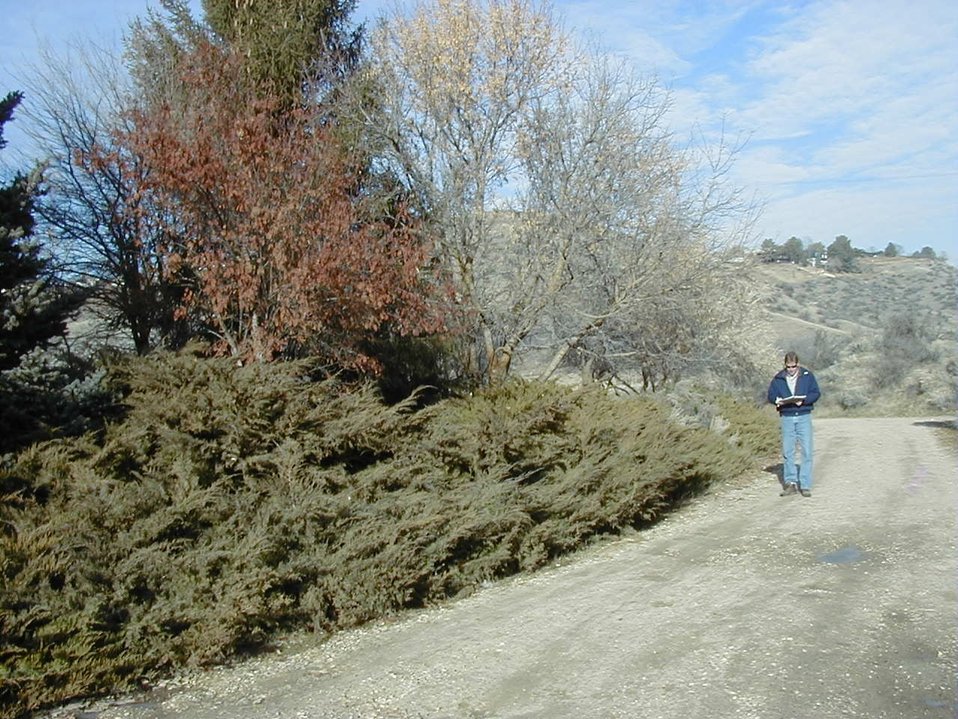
Environmental Education McCord house Boise Front Foothills Fire Safety and Urban interface Four Rivers Field Office LSRD Lower Snake River District